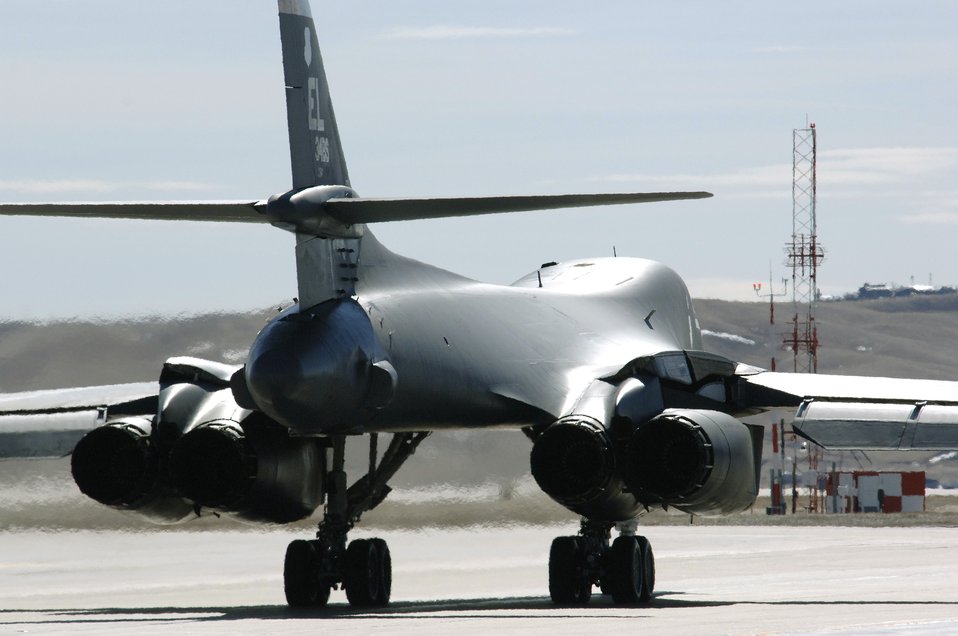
Fine-tuning the fleet

A B-1B Lancer from the 34th Bomb Squadron taxis out to the Ellsworth Air Force Base, S.D., runway March 06, for an operational readiness exercise mission. Base officials are preparing for a scheduled operational readiness inspection later this year.